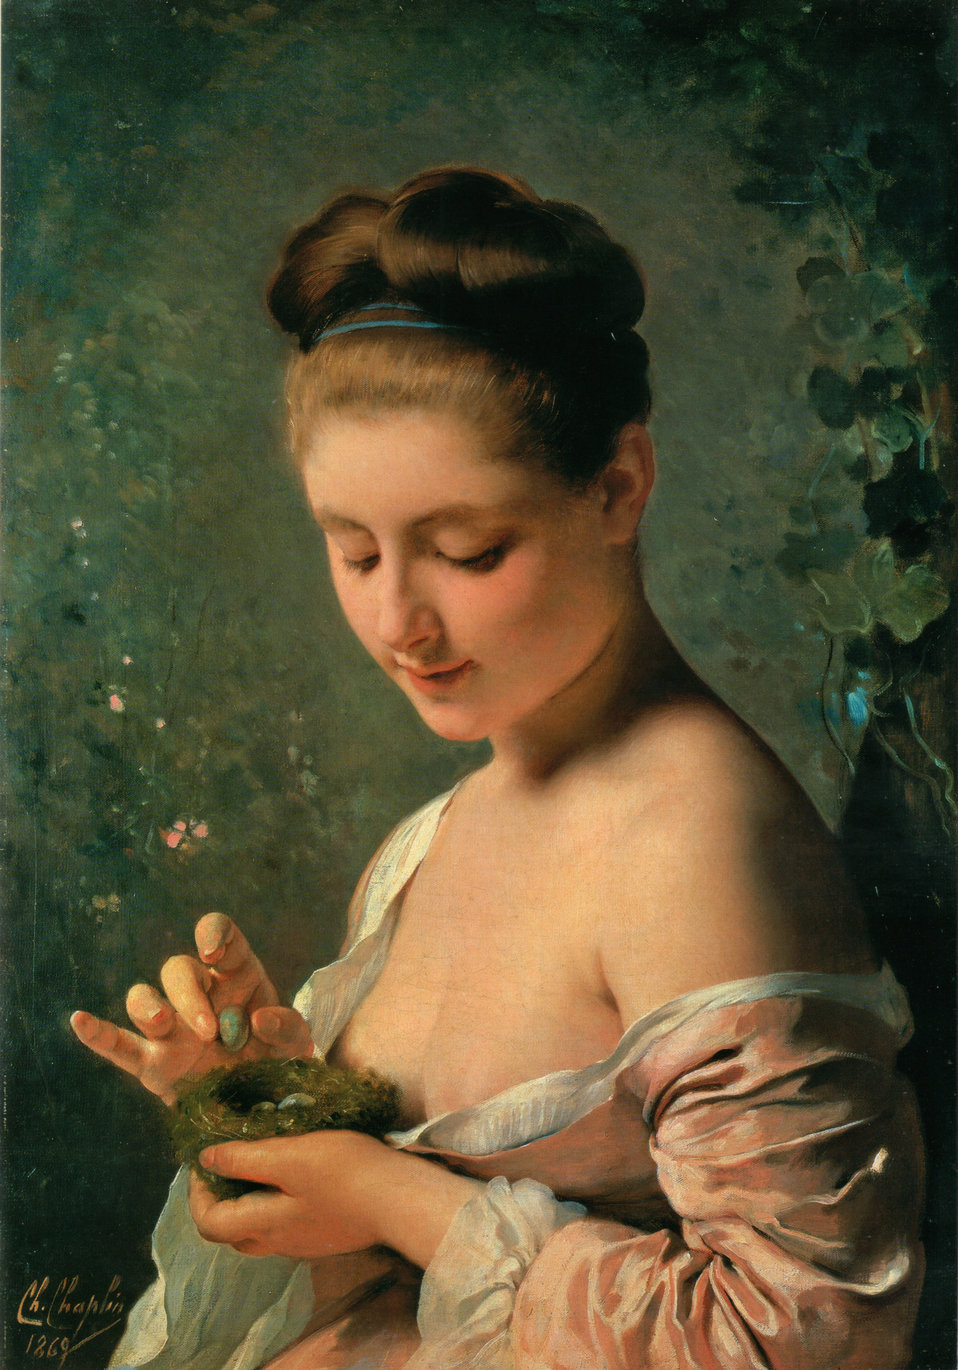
Chaplin-La ragazza col nido-1869